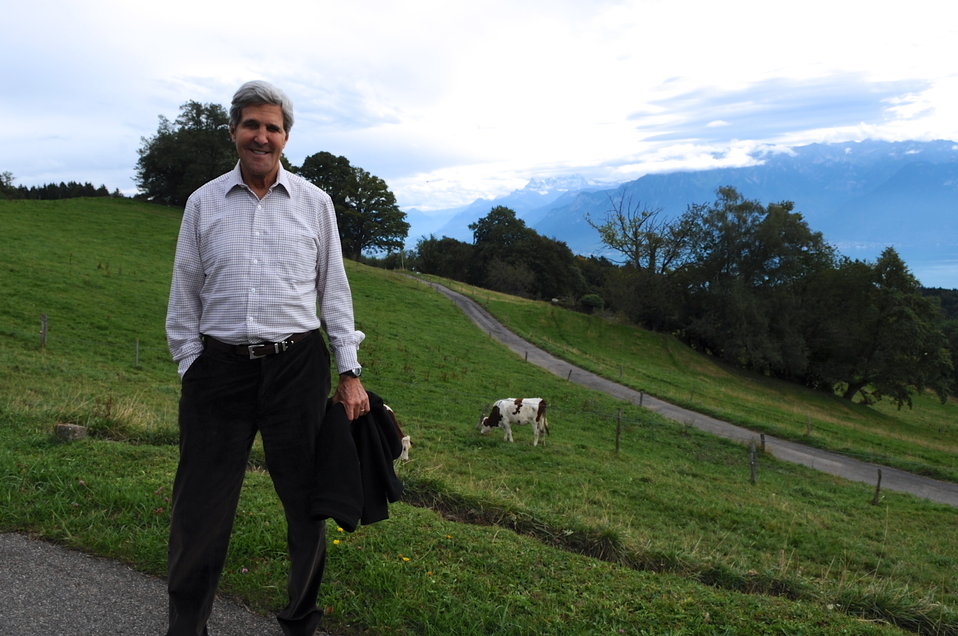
Secretary Kerry Pauses During a Walk in the Swiss Mountains

4:18 p.m., September 14, 2013 - U.S. Secretary of State John Kerry pauses for a photograph with the Dents du Midi sawtooth mountains in the background during a hike in the Swiss hillside after the U.S. and Russian governments reached an agreement to eliminate chemical weapons in Syria.